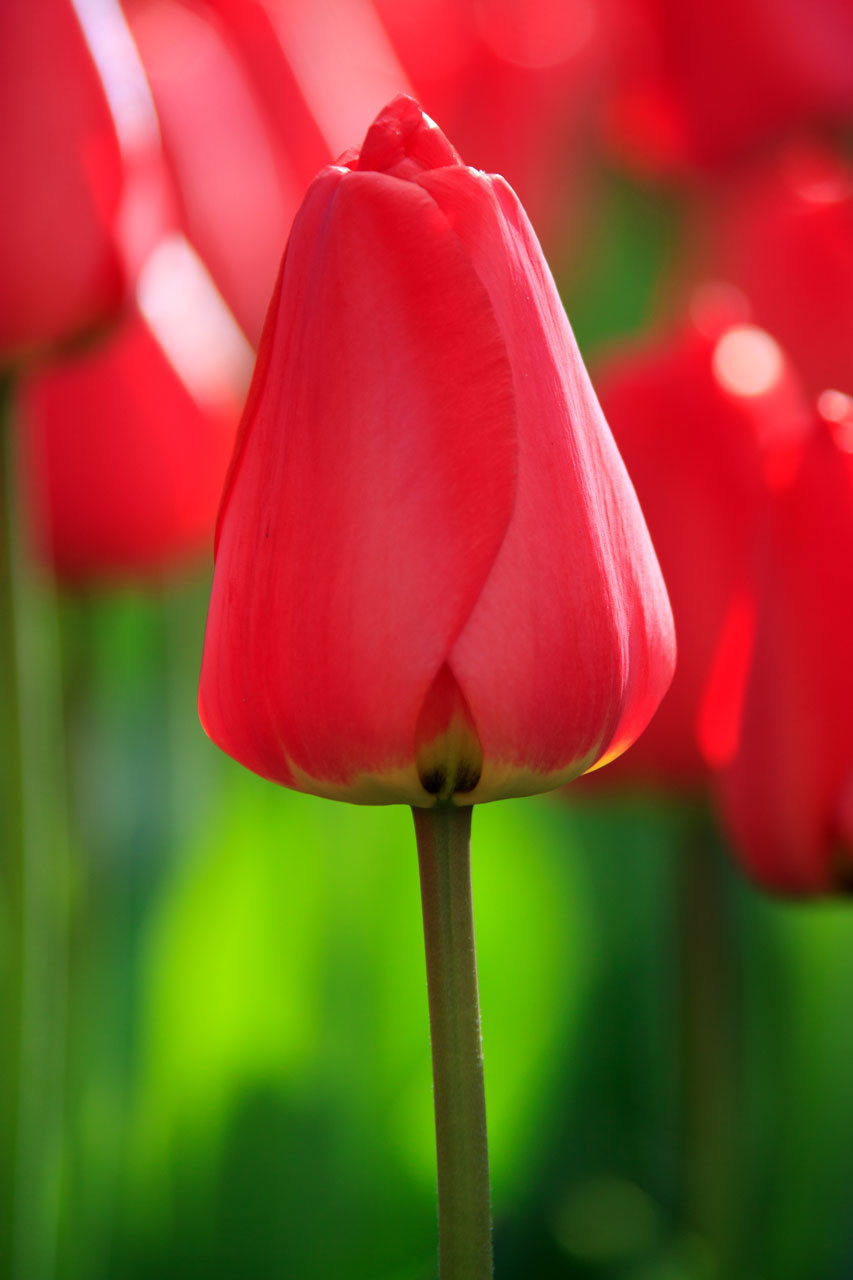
Red closed tulip

Closeup photo of a single red closed tulip flower.